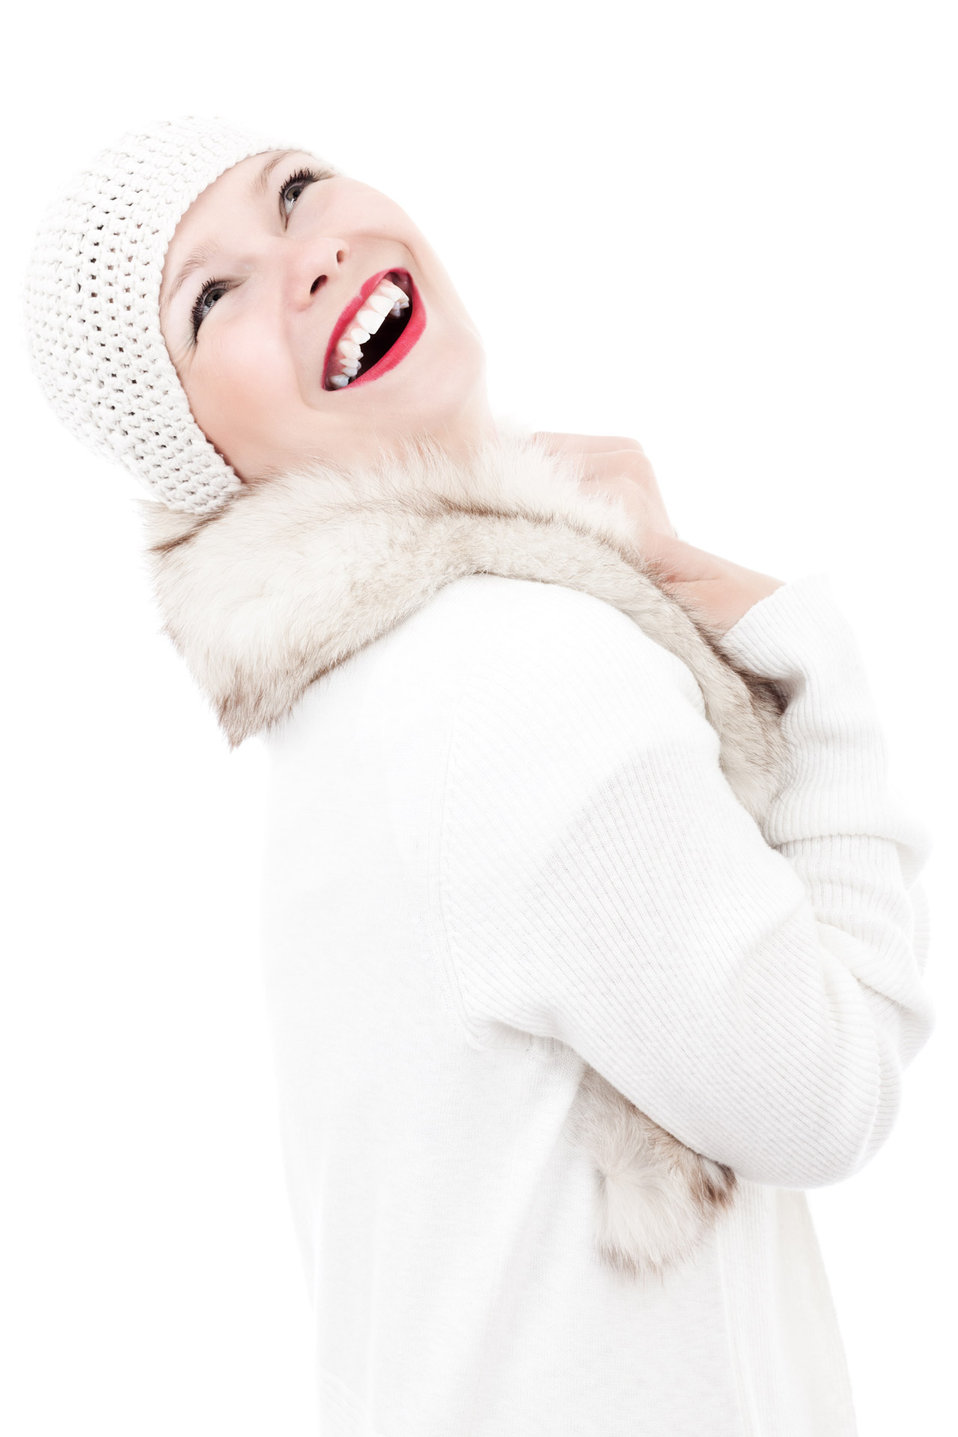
Winter woman smiling

Young woman in winter clothes laughing. isolated on white background.